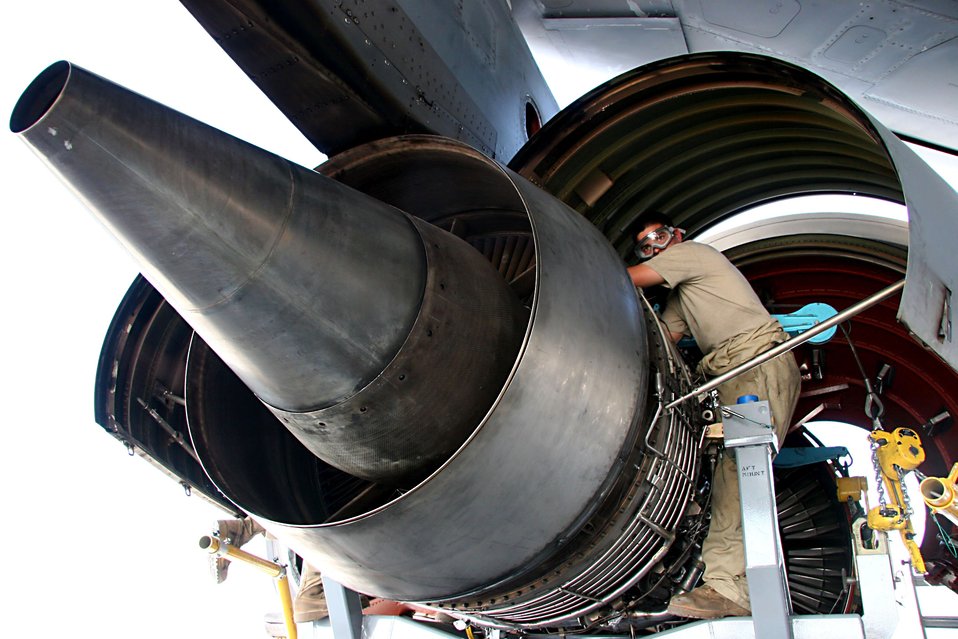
Desert KC-10 Engine Change

Airman 1st Class Louis Martens installs safety wires on the engine mounts of a KC-10 Extender engine Nov. 23 prior to installing the engine on the aircraft. Airman Martens is with the 380th Expeditionary Aircraft Maintenance Squadron at an air base in Southwest Asia.